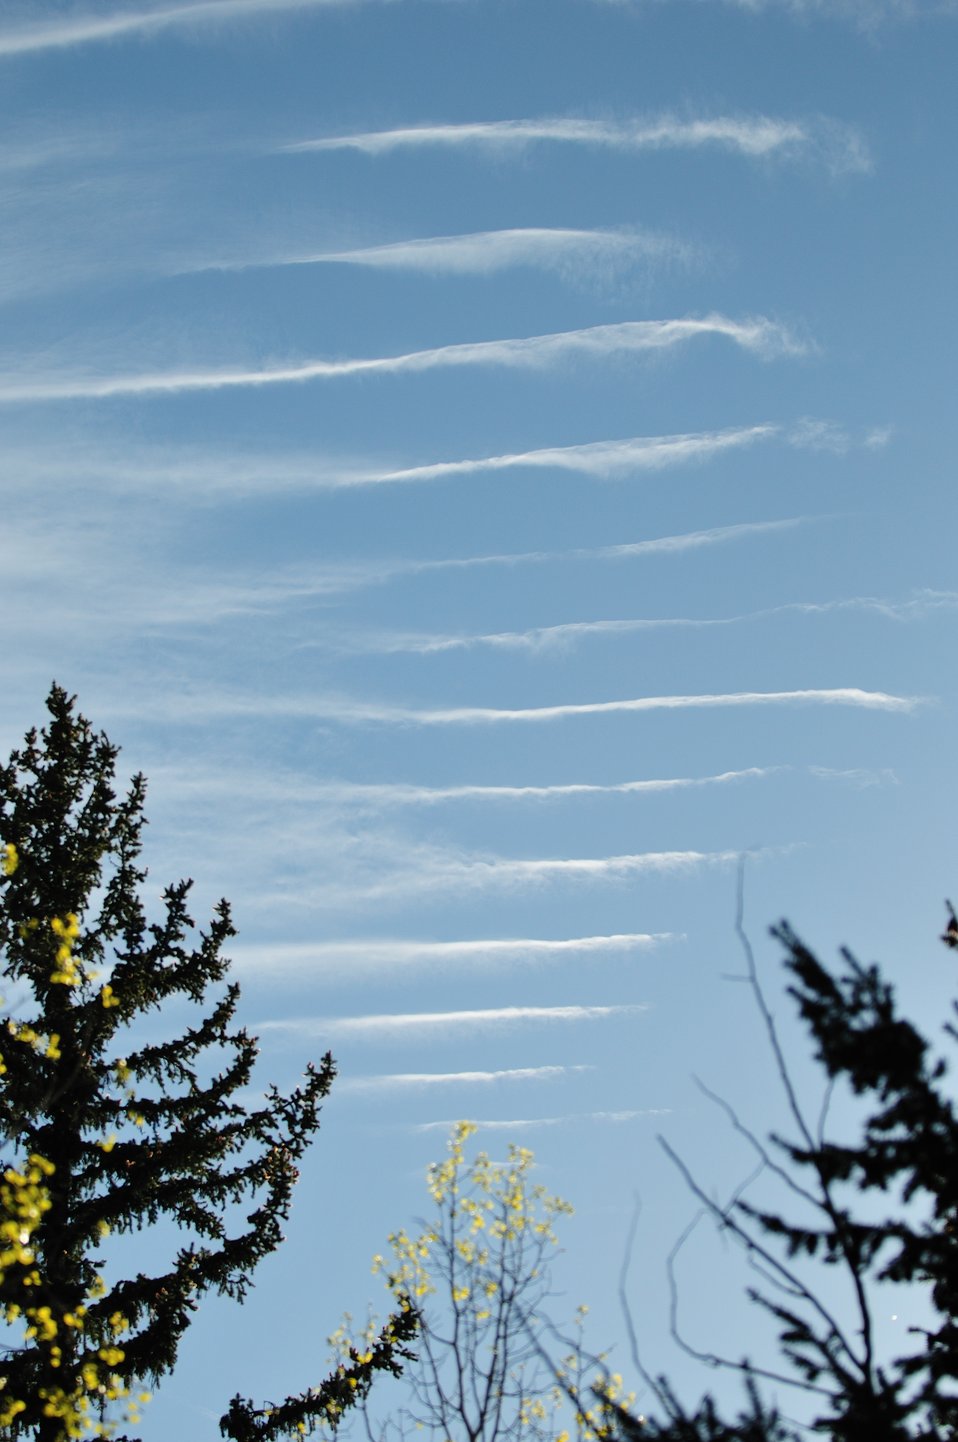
Gravity wave clouds forming over the Front Range of the Rocky Mountains.